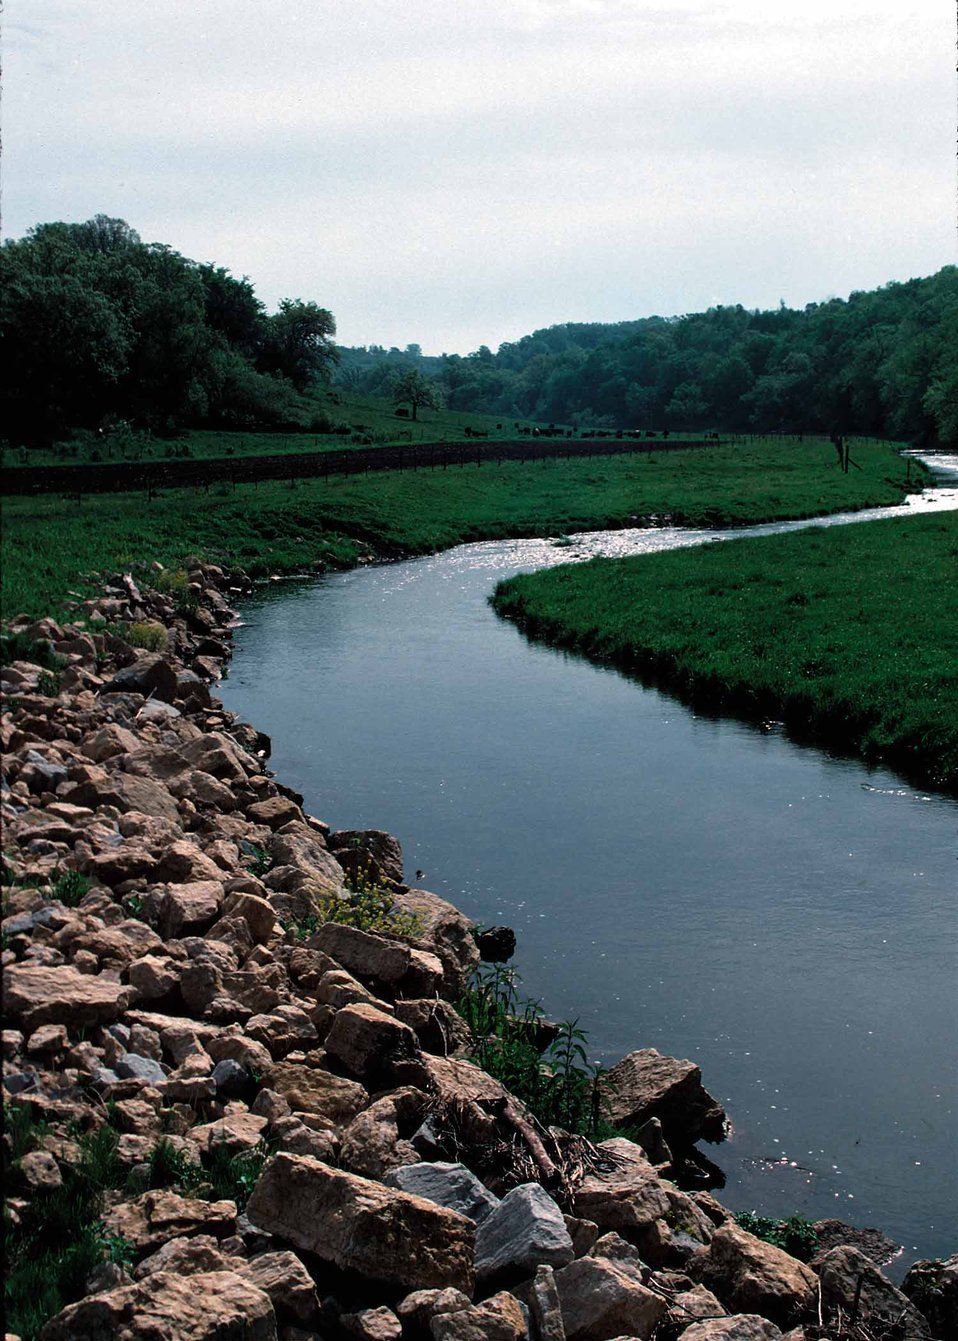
Rip rap helps stabilize the banks of a stream in a water quality project in northeast Iowa.